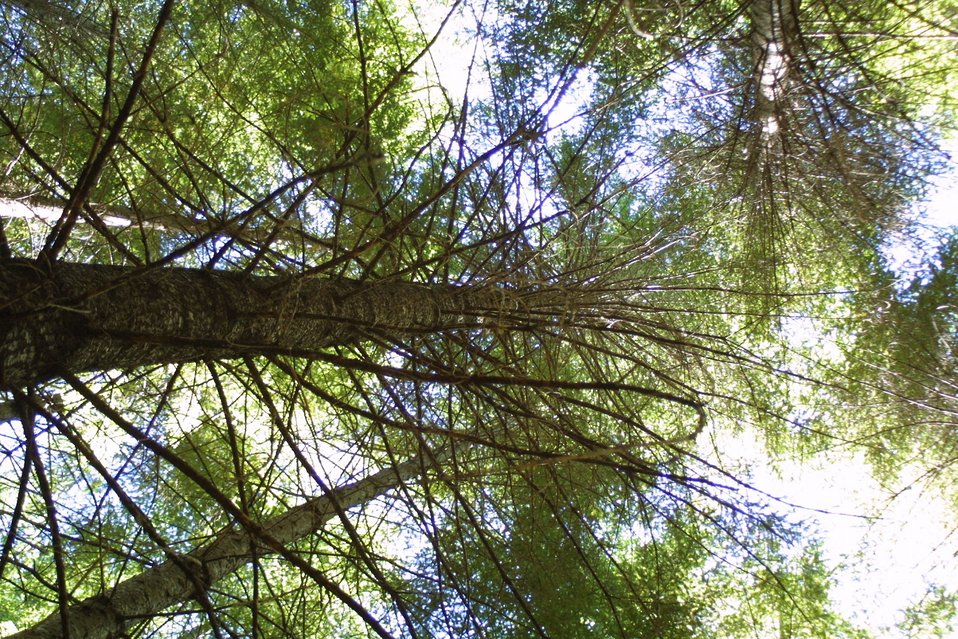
Camas East Timber Sale in Late Successional Reserve.